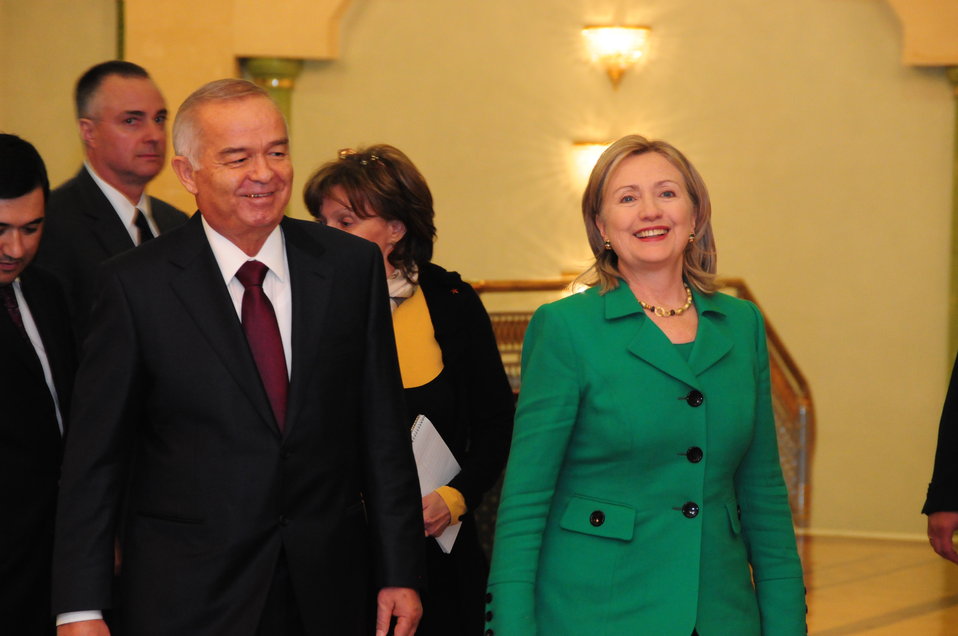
Uzbek President Karimov Walks With Secretary Clinton

Uzbek President Islam Karimov walks with U.S. Secretary of State Hillary Rodham Clinton to the meeting room in Tashkent, Uzbekistan, on December 2, 2010.